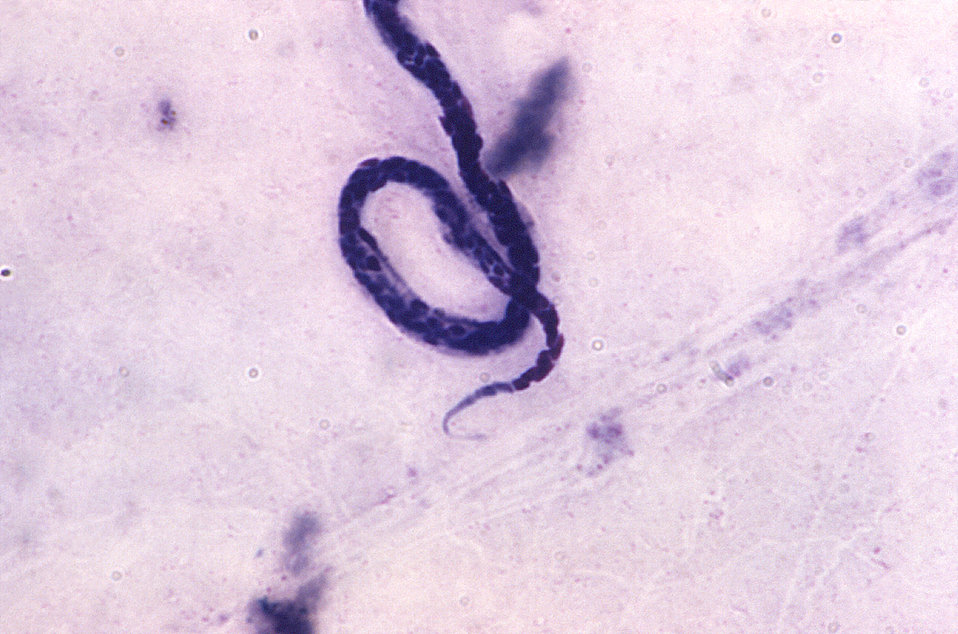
Under a relatively high magnification of 1000X; this Giemsa-satined photomicrograph revealed a detailed view of a single Mansonella ozzardi microfilaria.Laboratory Diagnosis: